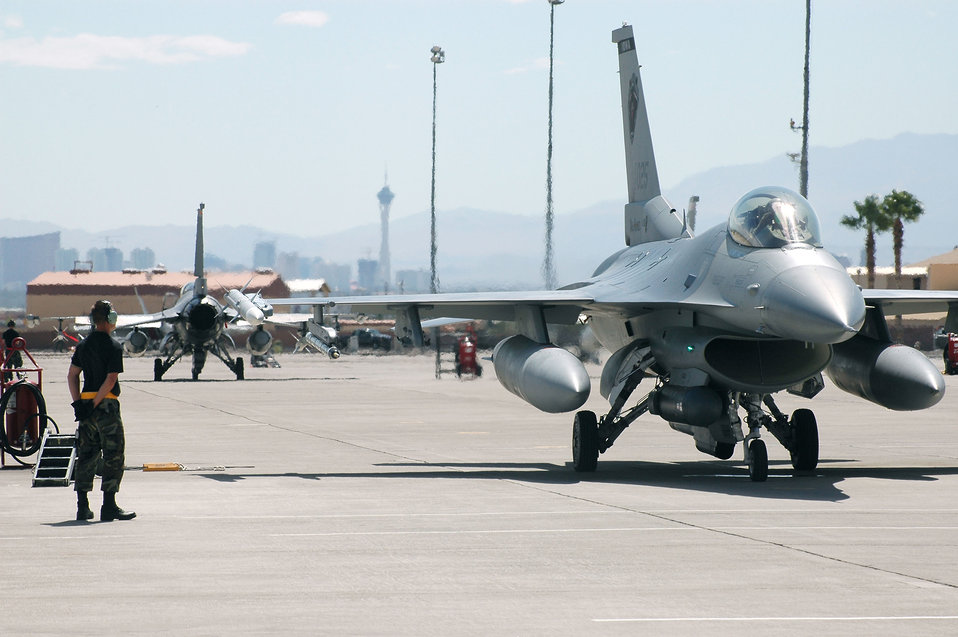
Getting ready for Red Flag

Senior Airman Ryan Stott prepares to marshal an F-16 Fighting Falcon that is ready for a mission at Red Flag 06-02 at Nellis Air Force Base, Nev., on Aug. 8. Airman Stott is a crew chief with the Iowa Air National Guard's 132nd Fighter Wing in Des Moines.